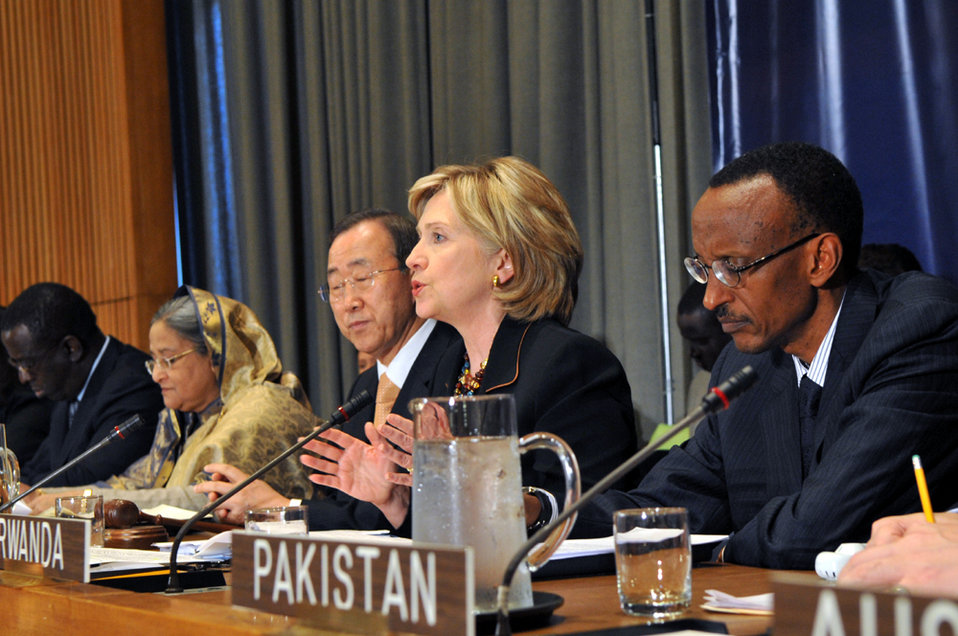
UNGA 2009: Food Security Forum

U.S. Secretary of State Hillary Rodham Clinton Secretary Clinton delivers remarks at a global Food Security event at the United Nations in New York City, New York September 26, 2009.